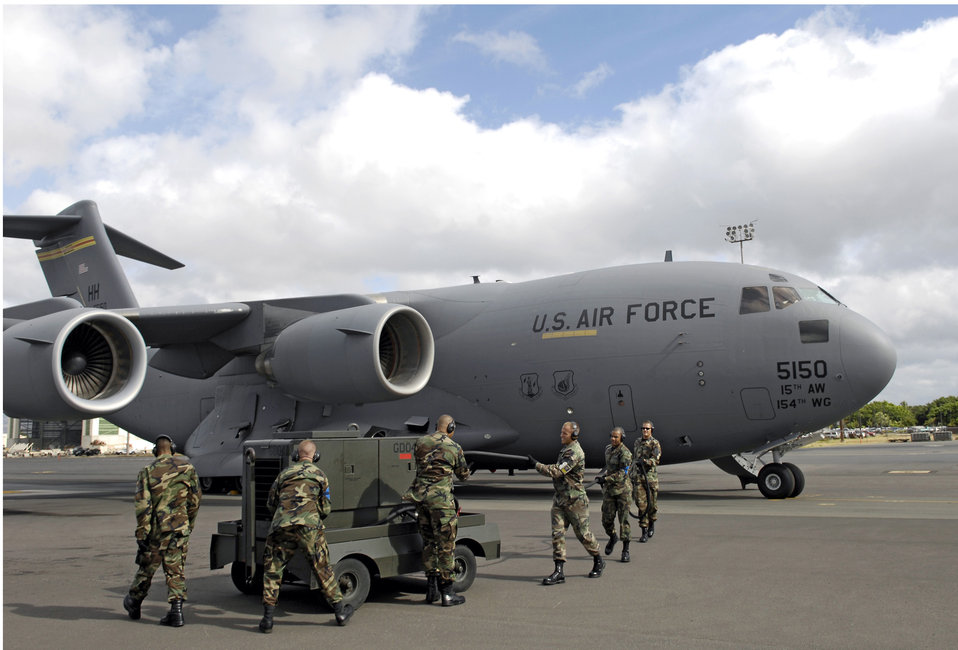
Hickam C-17 crews prep for Rodeo

Crew chiefs disconnect an auxiliary power unit from a C-17 Globemaster III June 28 before launching the aircraft from Hickam Air Force Base, Hawaii. The Airmen, from the 15th Aircraft Maintenance Squadron, are practicing for the upcoming Air Mobility Command Rodeo at McChord AFB, Wash.